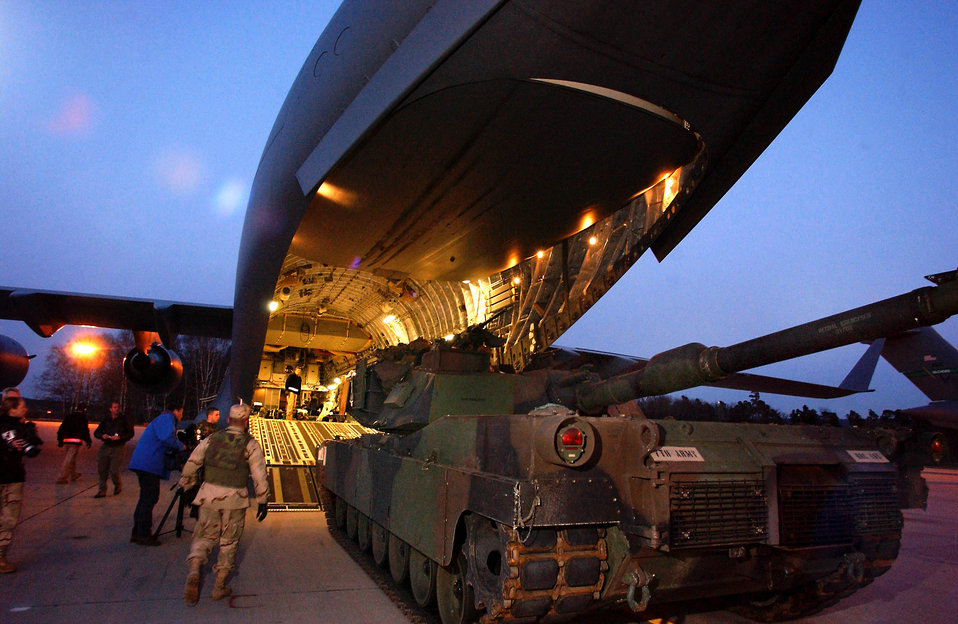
Tank delivery

RAMSTEIN AIR BASE, Germany -- Ground crews load a 66 ton Abrams tank onto a C-17 Globemaster III aircraft here. The aircraft, from the 17th Airlift Squadron, Charleston Air Force Base, S.C., delivered the Army's main battle tank to an Operation Iraqi Freedom air base in northern Iraq.